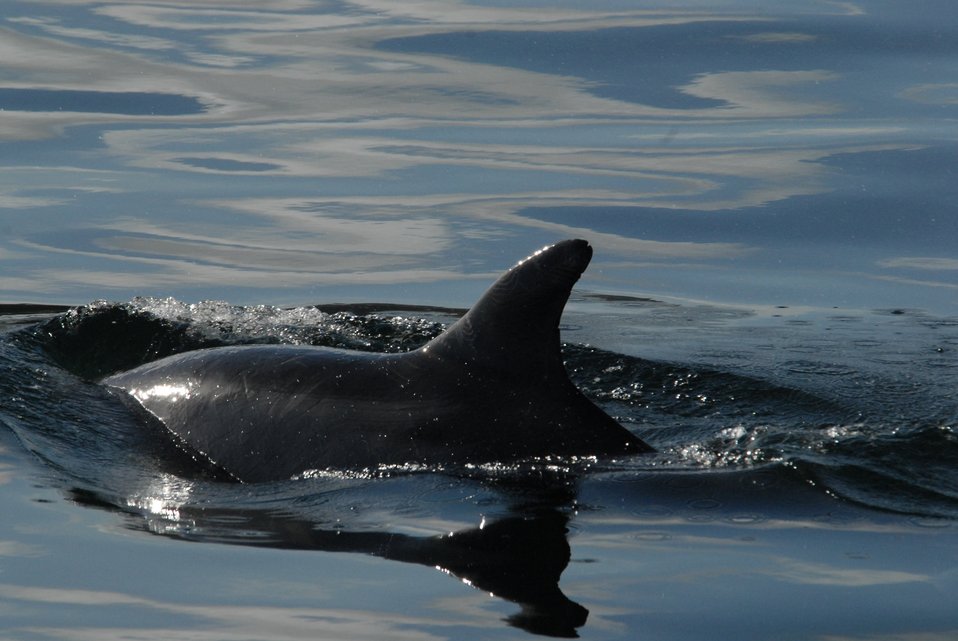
Killer whale